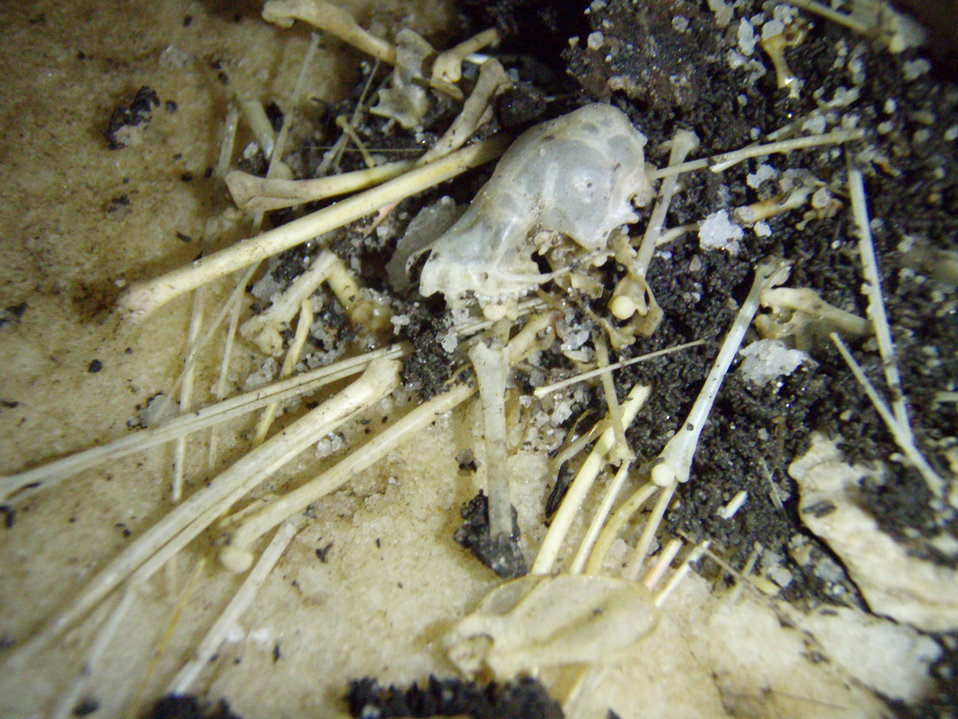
Bat skulls and bones litter the floor of Aeolus Cave, a WNS site in Vermont.